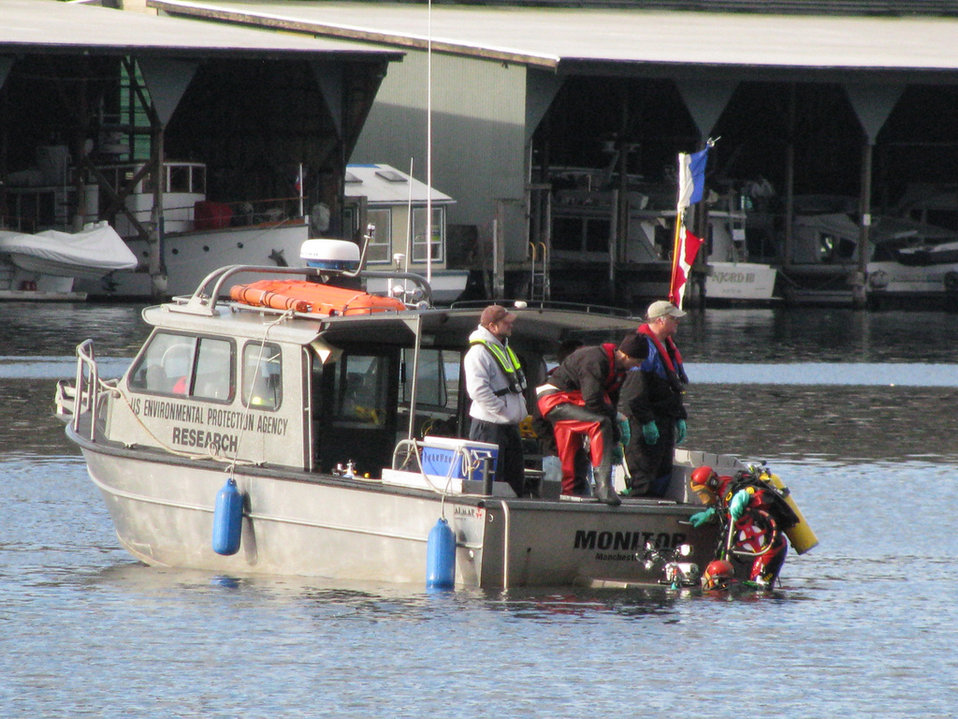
May 2012, EPA divers work from EPA Vessel 'Monitor'

The US EPA vessel Monitor is the primary dive platform for Region 10 divers throughout Puget Sound, as well as offshore of Oregon.

Dive operations aboard the Monitor also take place in the inland waters of those states as well as in Idaho.